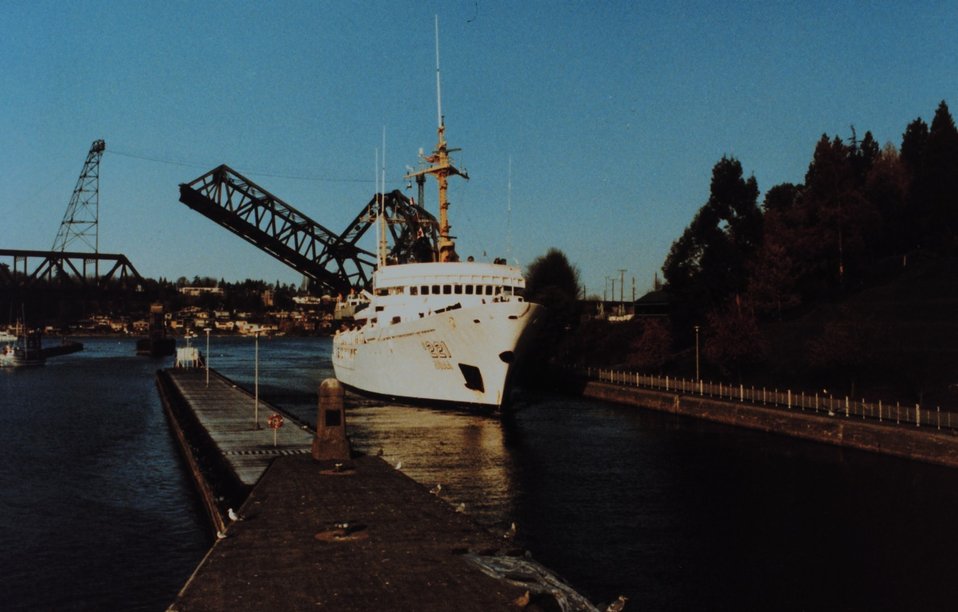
NOAA Ship RAINIER returning to home from field season. The ship is in the locks between Puget Sound and Lake Union.